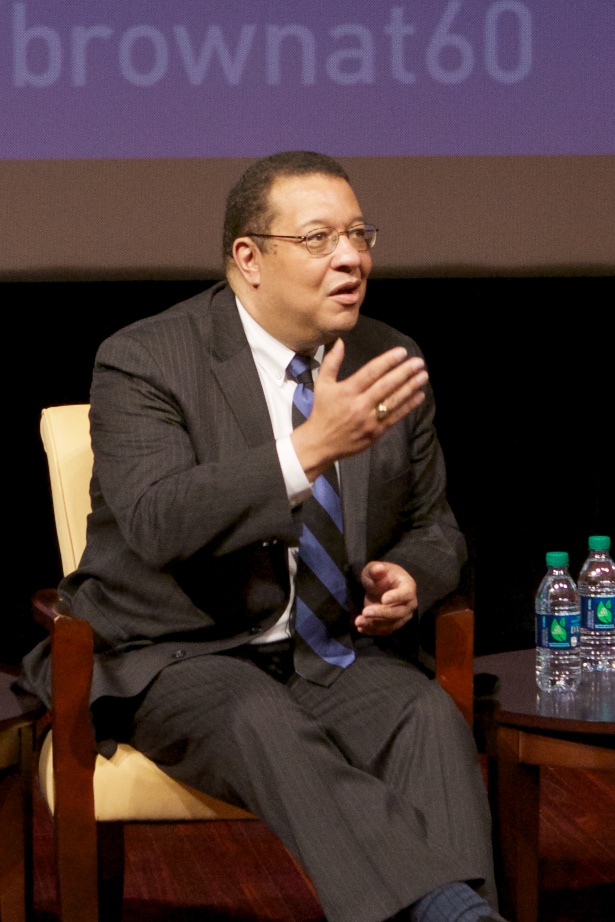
Brown at 60: Is Full Equality Within Our Grasp? A Conversation on Zero Tolerance, Segregation, and the Promise of Justice